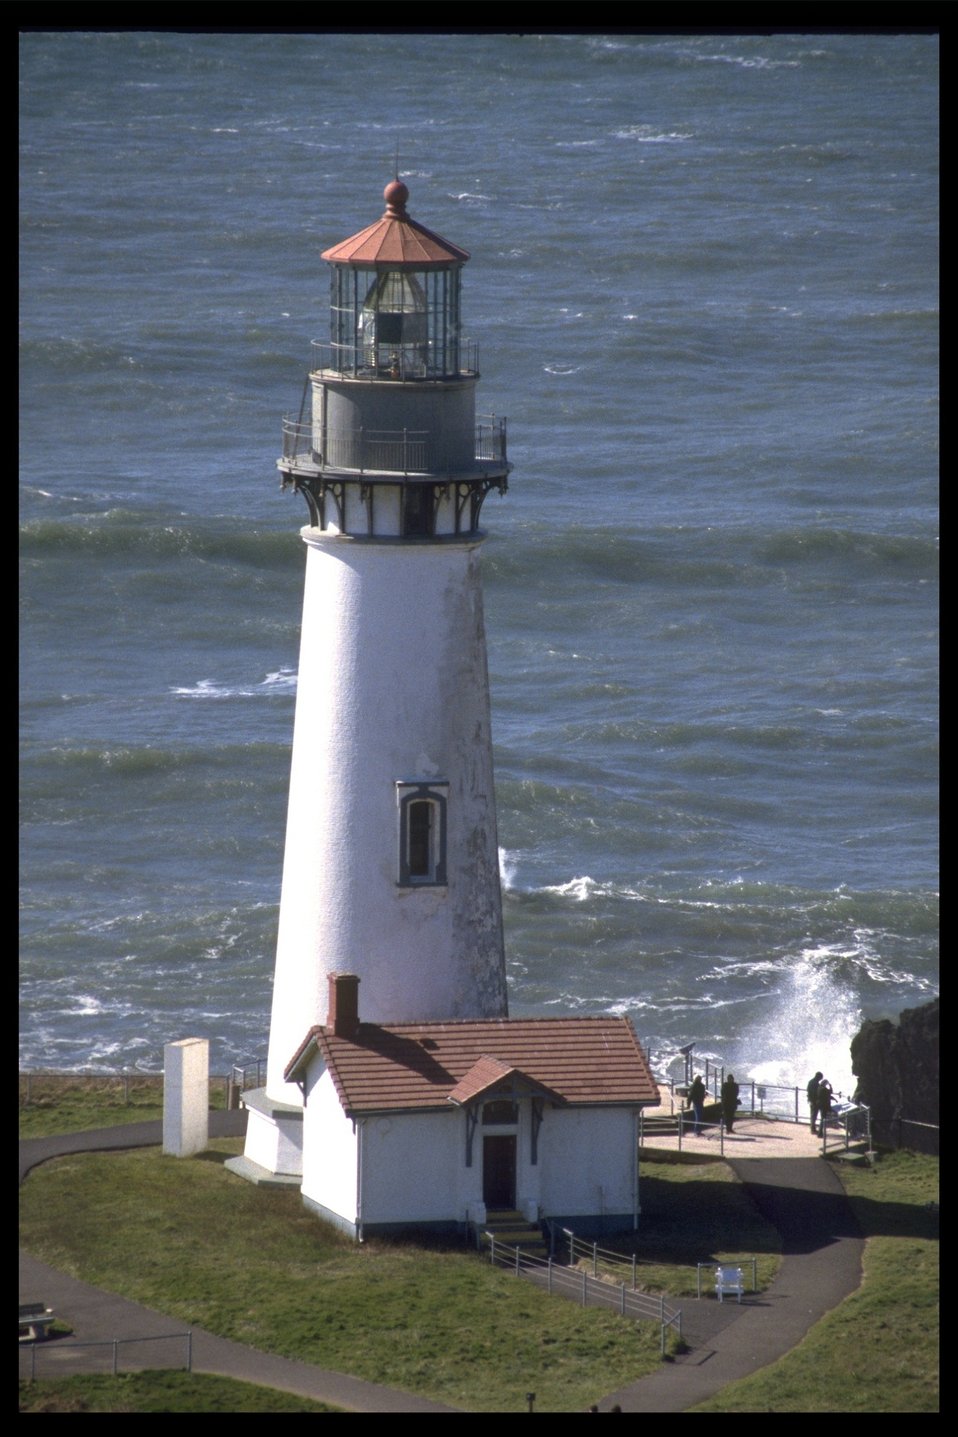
Yaquina Head Lighthouse.